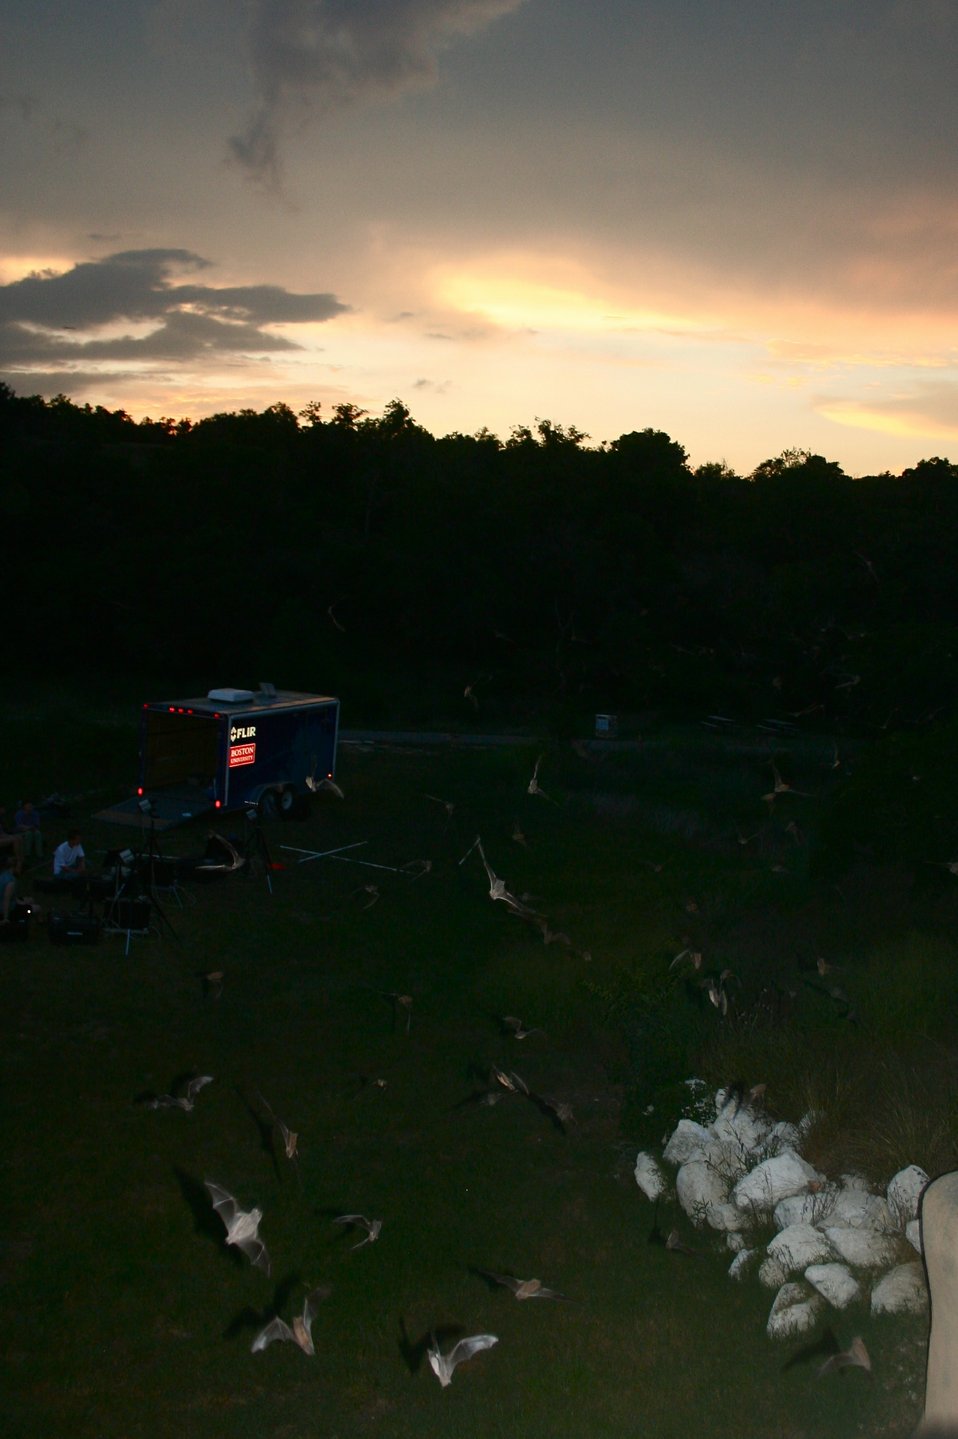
View of bats emerging and research equipment